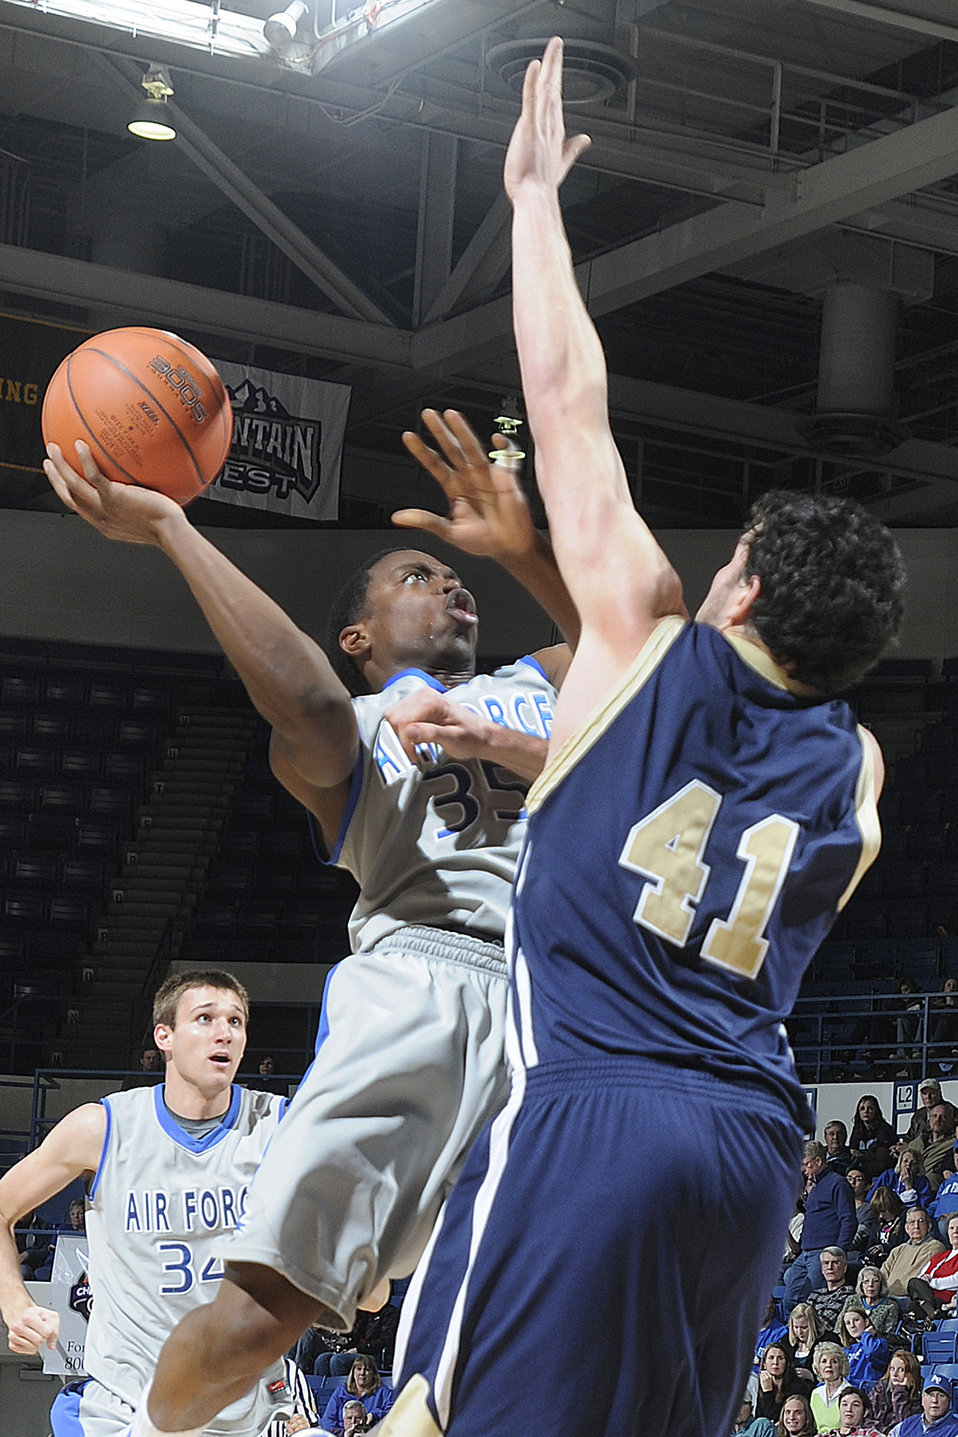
Falcons Defeat UC Davis Aggies

At the U.S. Air Force Academy, Colo., junior guard Evan Washington shoots over Aggie Dominic Calegari for 2 of his 10 points as the Falcons rally to defeat University of California-Davis 69-57 Dec. 22, 2009. Through ten games this season, Washington is averaging 12 points per contest.